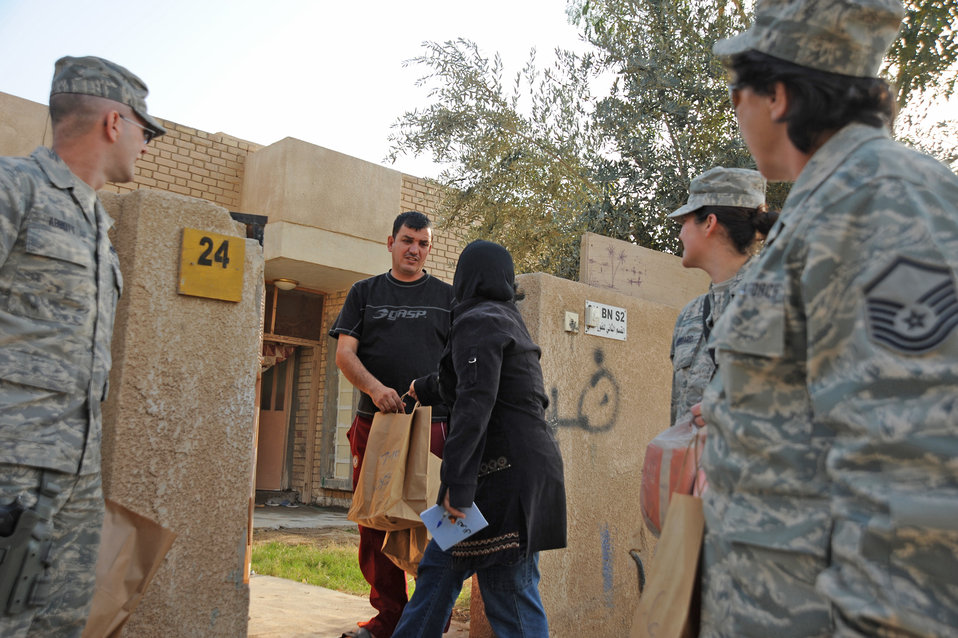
Servicemembers donate items to Iraqi neighbors

Airmen from Sather Air Base hand out bags of donated goods Jan. 29, 2010, to Iraqis living near Sather Air Base, Iraq, as part of the Sather AB Rising Six good neighbor program.